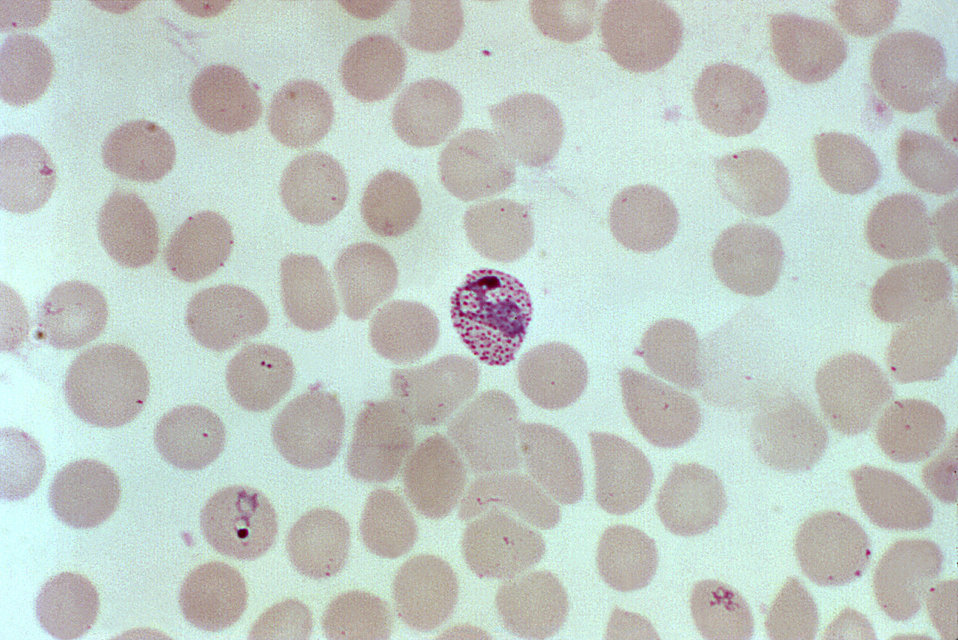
This photomicrograph shows a red blood cell being infected by Plasmodium vivax during the mature trophozoite stage.